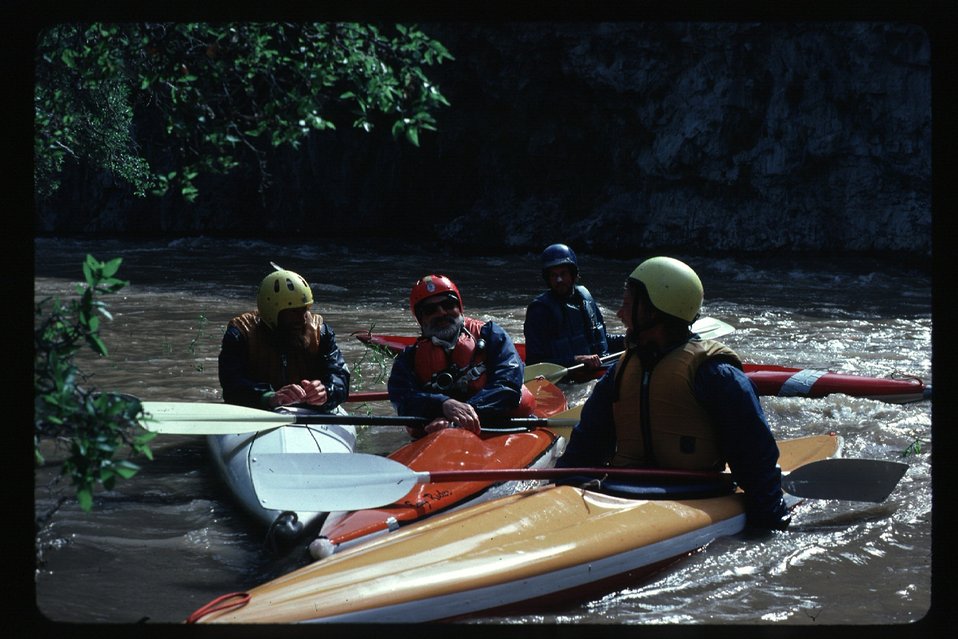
Kayakers on Bruneau River Owyhee Field Office LSRD Lower Snake River District